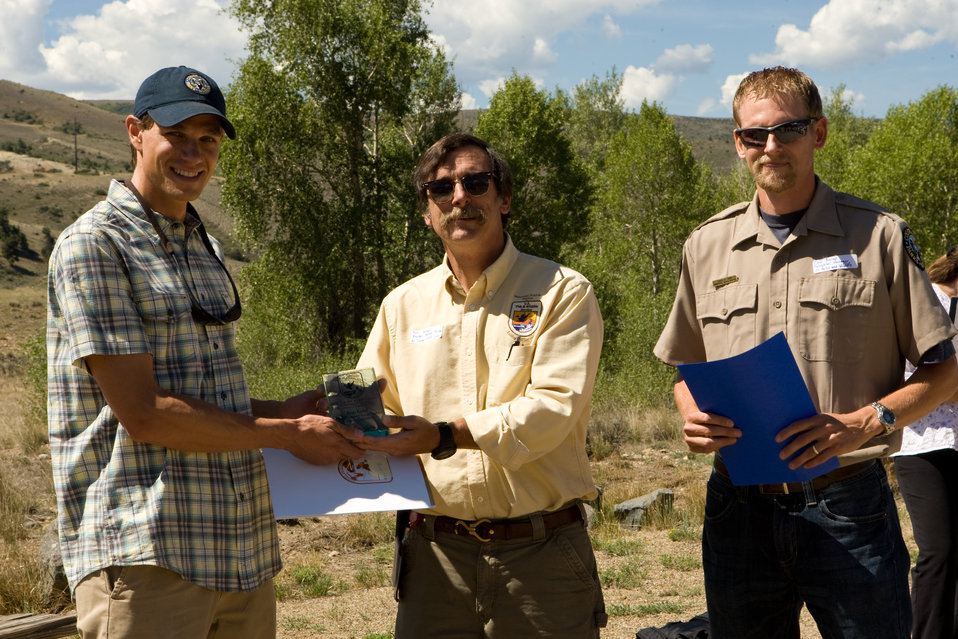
Colorado Rare Plant Conservation Initiative

The Colorado Rare Plant Conservation Initiative (RPCI) is a partnership of 23 statewide and regional agencies, private organizations, and academic institutions working to conserve 121 rare plants in Colorado. As part of these efforts the group developed the Colorado Rare Plant Conservation Strategy, developed Best Management Practices to reduce energy development impacts, addressed climate change, and developed focused strategies for the conservation of individual species at eight priority landscapes. The group has also worked to coordinate volunteer efforts for plant conservation across the state.